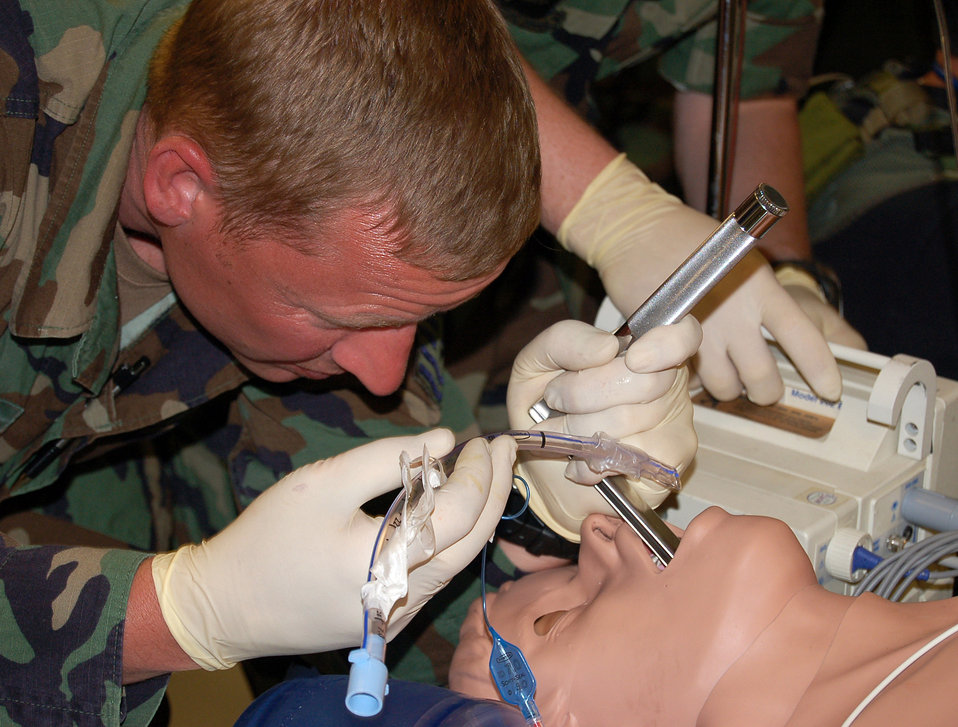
Mannequins help improve casualty care

Tech. Sgt. Jared Schultz demonstrates to students how to secure an airway on a computerized mannequin on Thursday, May 18, 2006, during a new Air Force Special Operations Command casualty evacuation course. The realistic training is geared to better prepare medics for the chaos of combat operations. Sergeant Schultz is an independent duty medical technician and casualty evacuation course instructor with AFSOC.